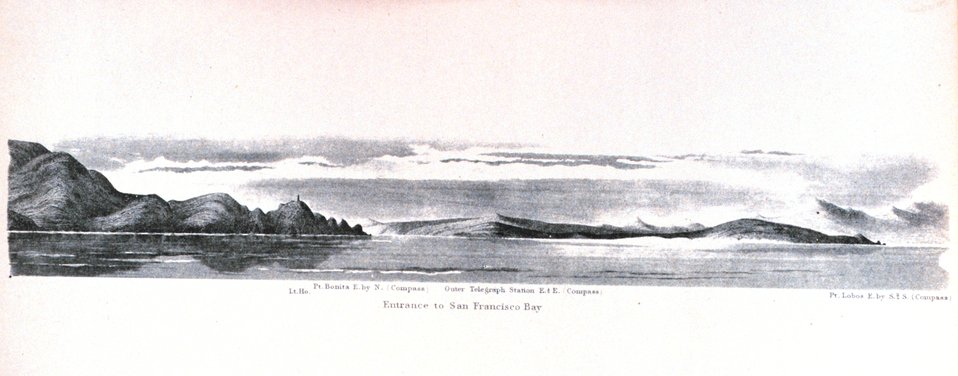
The entrance to San Francisco Bay. In: Pacific Coast. Coast Pilot of California, Oregon, and Washington Territory In: Pacific Coast. Coast Pilot of California, Oregon, and Washington Territory . By George Davidson, 1869. P. 56. Library Call Number VK947.D4 1869.